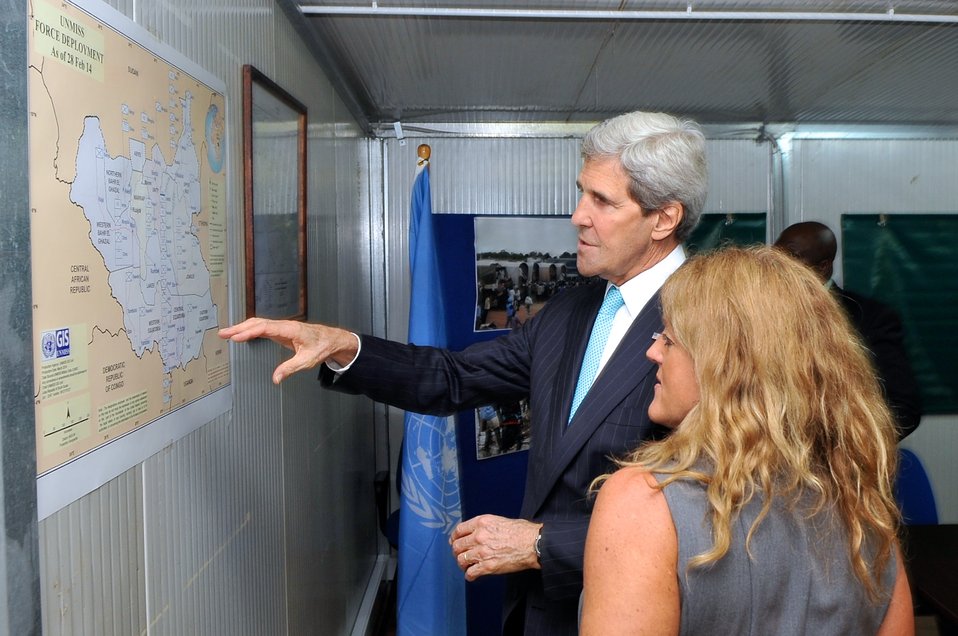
Secretary Kerry, UNMISS Special Representative Johnson Look at Force Deployment Map in South Sudan

U.S. Secretary of State John Kerry and UNMISS Special Representative Hilde Johnson look at a map on May 2, 2014, showing United Nations force deployments around Juba, South Sudan, amid the country’s civil war.